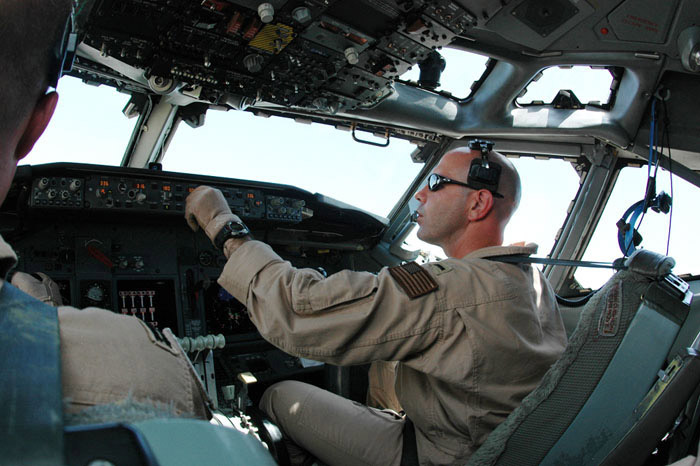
Airmen, Sailors join up in convoy relay

Navy Lt j.g. Nathan Lassas enters information into the autopilot computer in July in Southwest Asia. Lieutenant Lassas, assigned to Task Force 124, pilots an E-6B Mercury over Iraq which helps Soldiers communicate on the ground.